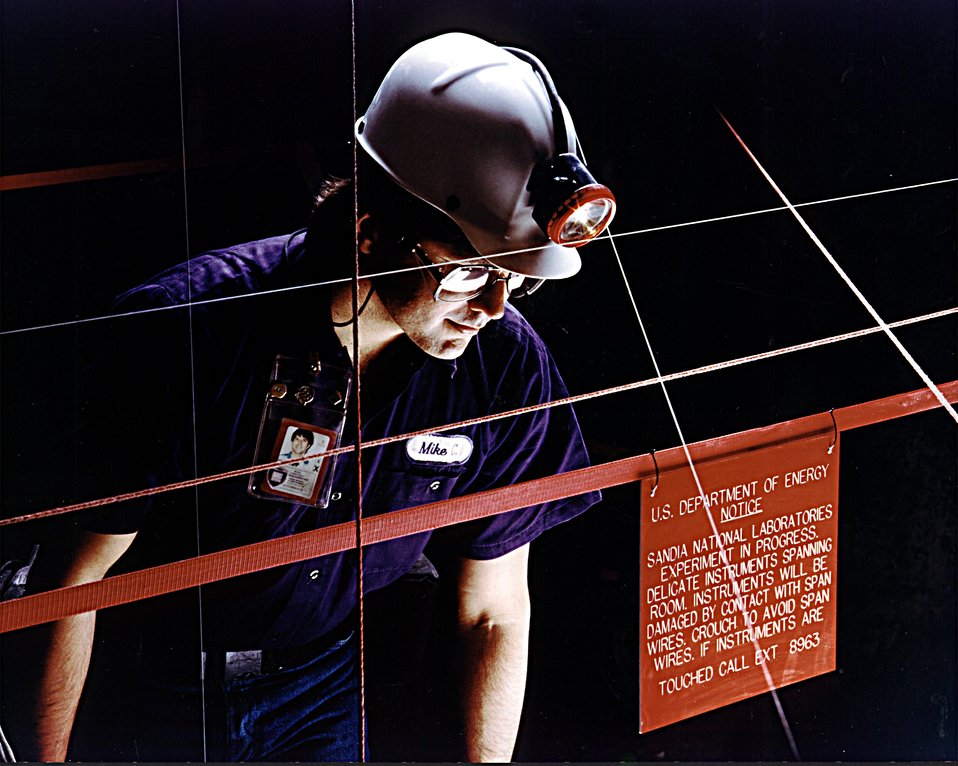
WIPP EXPERIMENTAL TECHNICIAN OBSERVES AN EXTENSOMETER ARRAY.

AN EXTENSOMETER ARRAY IS USED TO MEASURE CLOSURE OF THE ROCK SALT IN THE
UNDERGROUND. THE WASTE ISOLATION PILOT PLANT, LOCATED IN SOUTHEASTERN NEW MEXICO, IS A DOE RESEARCH AND DEVELOPMENT FACILITY DESIGNED TO DEMONSTRATE THE SAFE DISPOSAL OF DEFENSE RADIOACTIVE WASTE IN ANCIENT SALT BEDS.